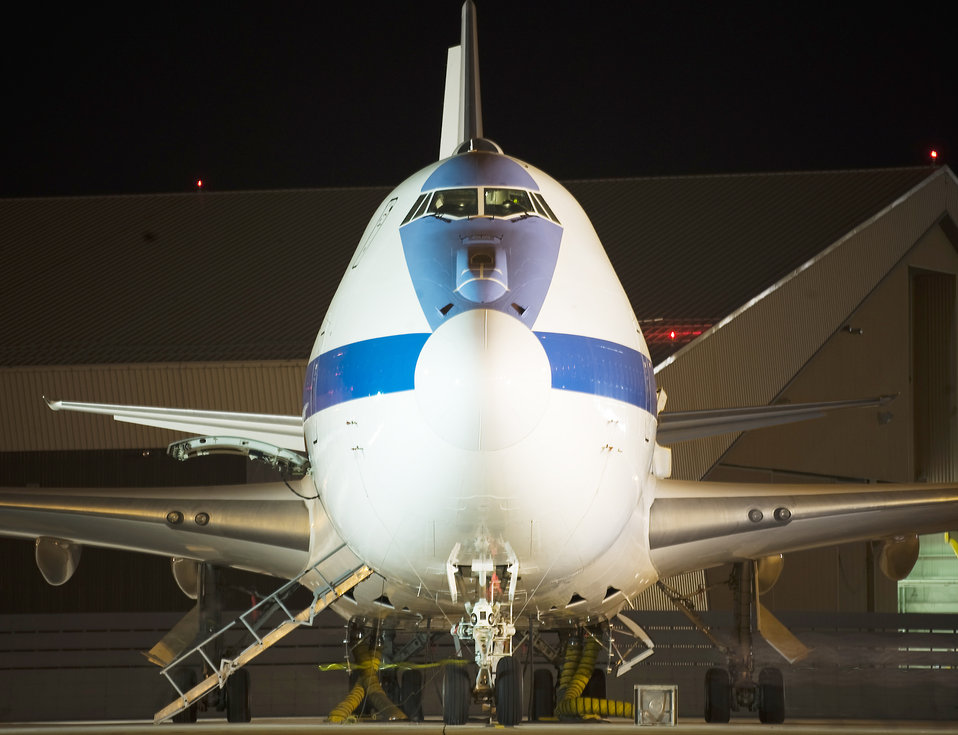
E-4B milestone

The E-4B is the National Airborne Operations Center, based at Offutt Air Force Base, Neb., supports the president, secretary of defense and chairman of the Joint Chiefs of Staff. The alert crew comprises 21 joint-service battle staff members along with an Air Force aircrew, maintenance, security and communications personnel. The aircraft passed a significant milestone this month by sitting alert constantly for more than 35 years.